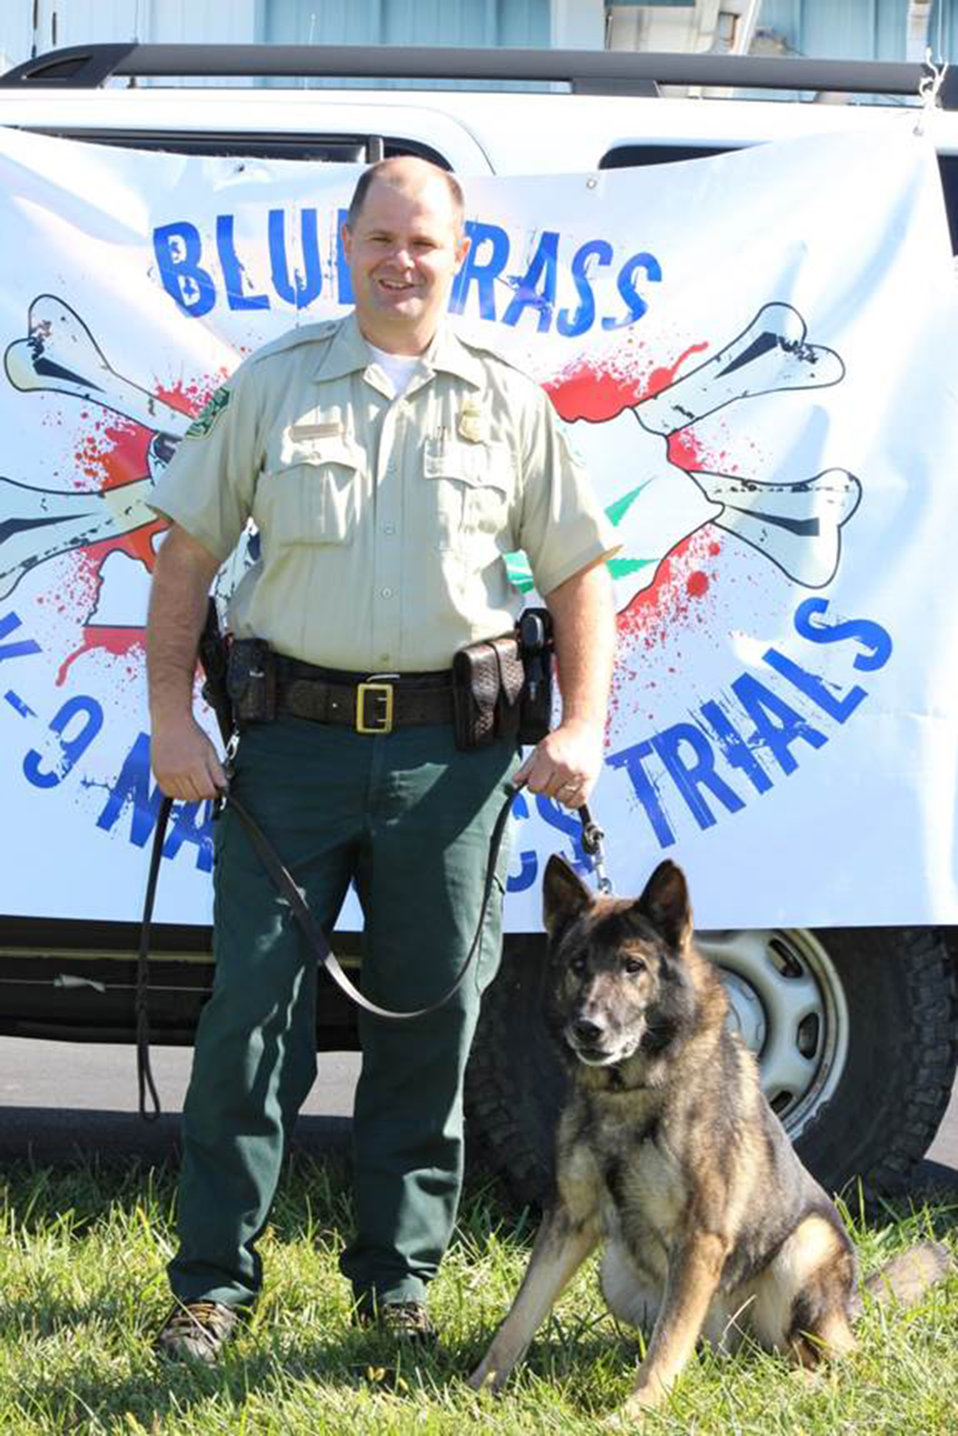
Officer Crips and Partner

For six years, U.S. Forest Service Law Enforcement Office Jason Crisp and his K-9 partner Maros patrolled the Grandfather Ranger District on the Pisgah National Forest in western North Carolin. They were killed during a search for a homicide suspect.